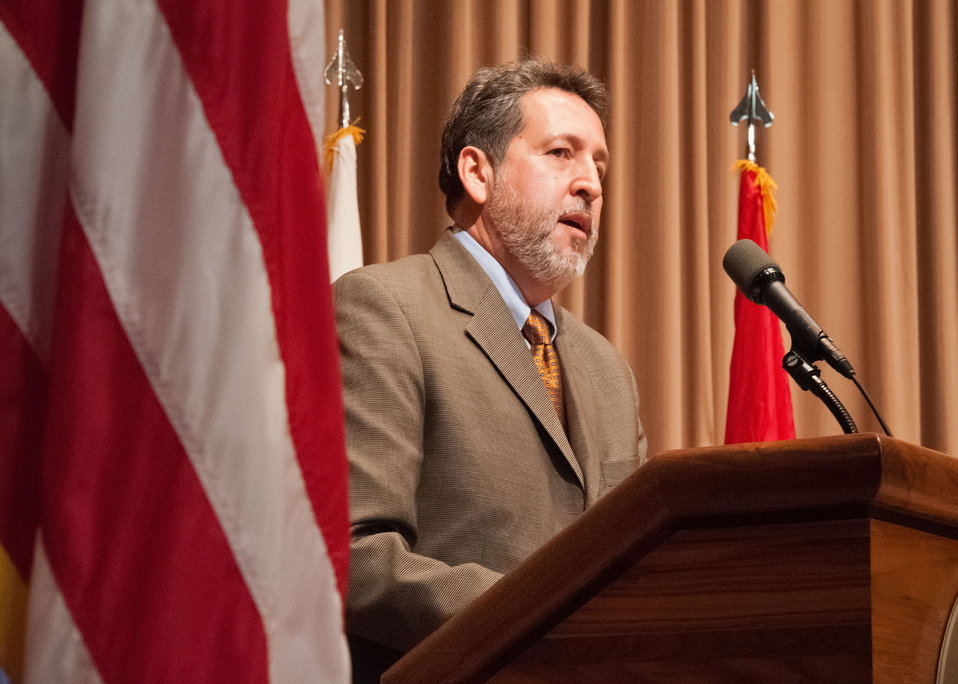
U.S. Department of Agriculture (USDA) Director, Office of Adjudication, Office of the Assistant Secretary for Civil Rights Carl-Martin Ruiz offers Closing Remarks at USDA's Veterans Day Observance: Honoring All Who Served, in Washington, D.C. on Wednesday, Nov. 7, 2012. Ruiz an Army veteran served honorably with the U.S. Army, elite 3/11 Armored Calvary (Black Horse), Reconnaissance Squadron.